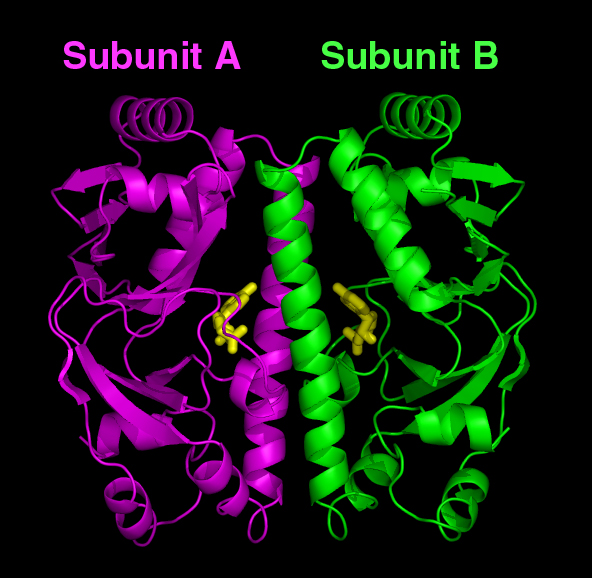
Tuberculosis 2

Computer model of the predicted structure for the cyclic AMP receptor protein (CRP) found in Mycobacterium tuberculosis. After binding cyclic AMP molecules (the yellow bodies in the center), the CRP is believed to change its structure so that the two subunits (colored purple on left and green on right) become symmetrical (identical in shape). This the 'on' state of the CRP that can bind a gene (DNA) and activate it to carry out functions necessary for the microbe's survival.